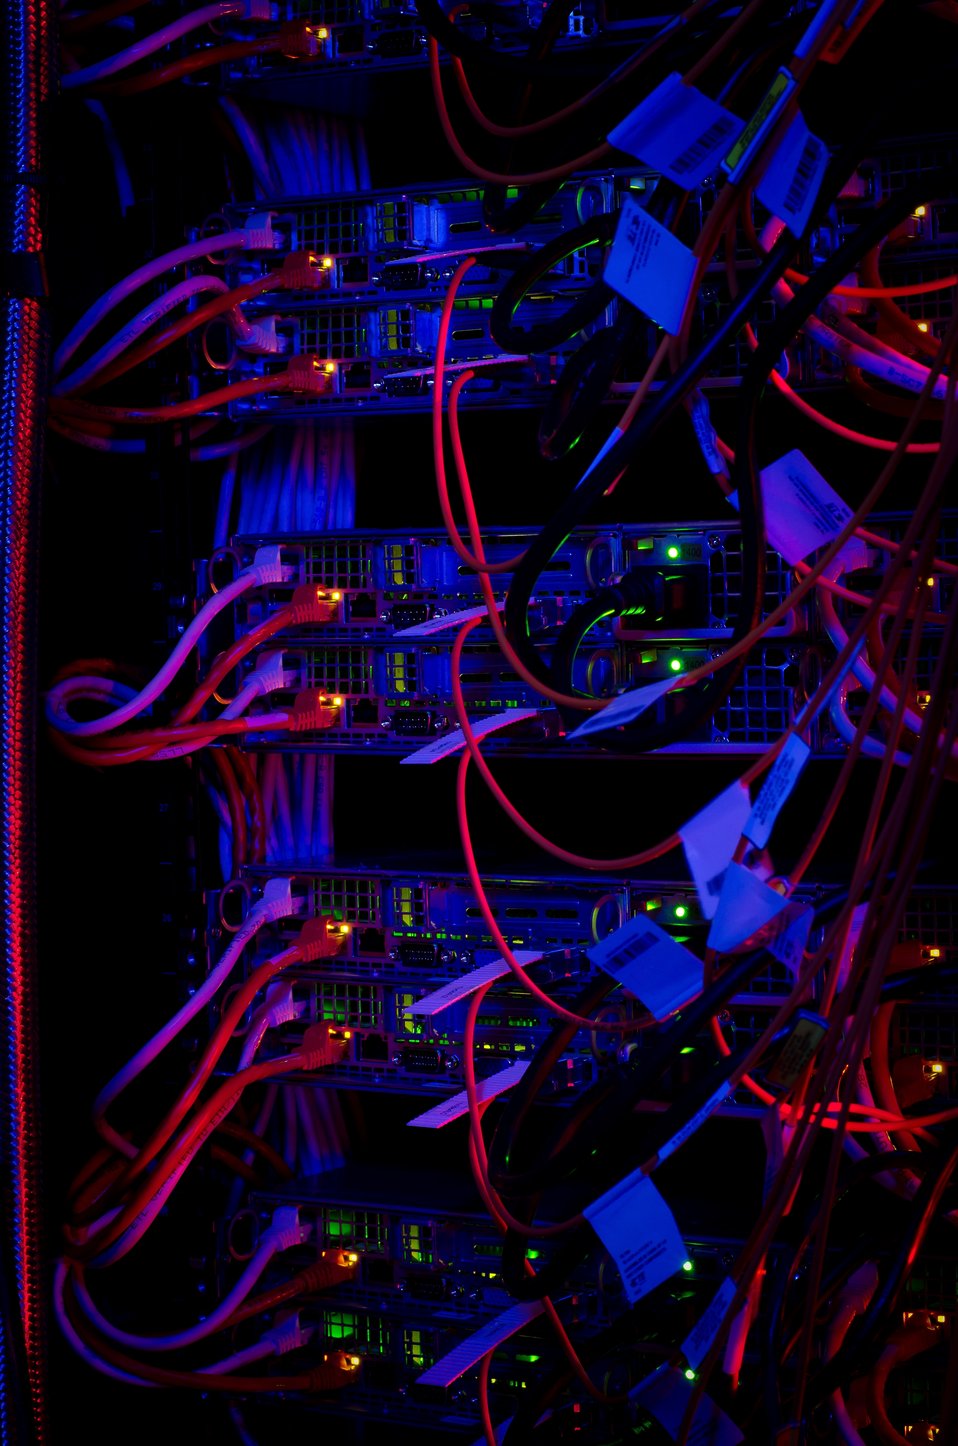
Network and power connections at the rear of Pacific Northwest National Laboratory's Olympus supercomputer take on blue and red hues in the glow of the electronic lights.

Olympus, the new theoretical 162-Teraflop peak supercomputer at Pacific Northwest National Laboratory, is helping scientists do more complex, advanced research in areas such as climate science and smart grid development.